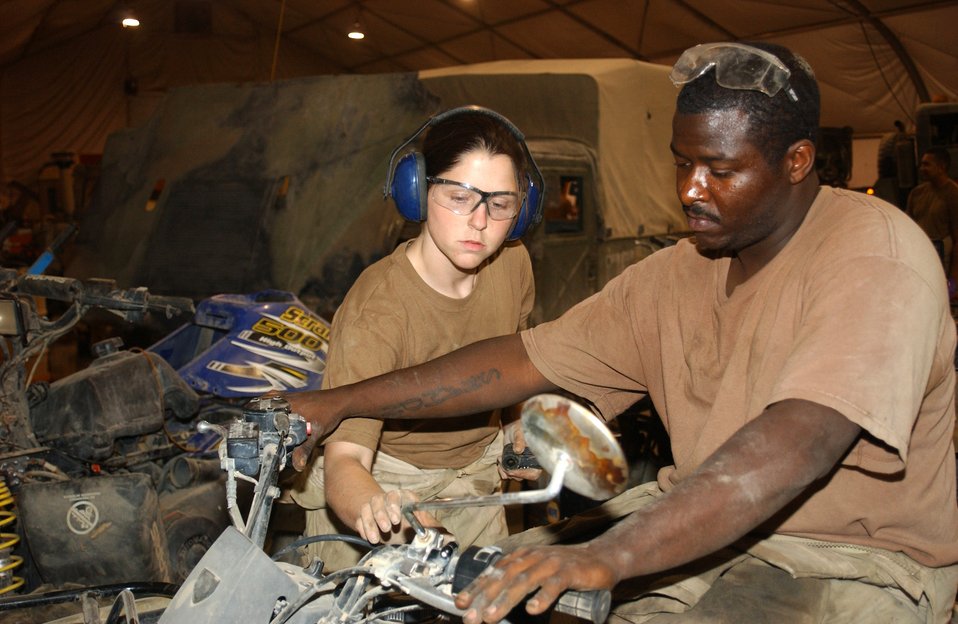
Getting started

ALI BASE, Iraq -- Senior Airmen Lara Martin (left) and Dennis Maynard start up an all-terrain vehicle they repaired here. The Airmen with the 407th Expeditionary Logistics Readiness Squadron's vehicle maintenance section here are able to fix any vehicle on base. Airman Martin is deployed from Ramstein Air Base, Germany, and Airman Maynard is deployed from Pope Air Force Base, N.C.